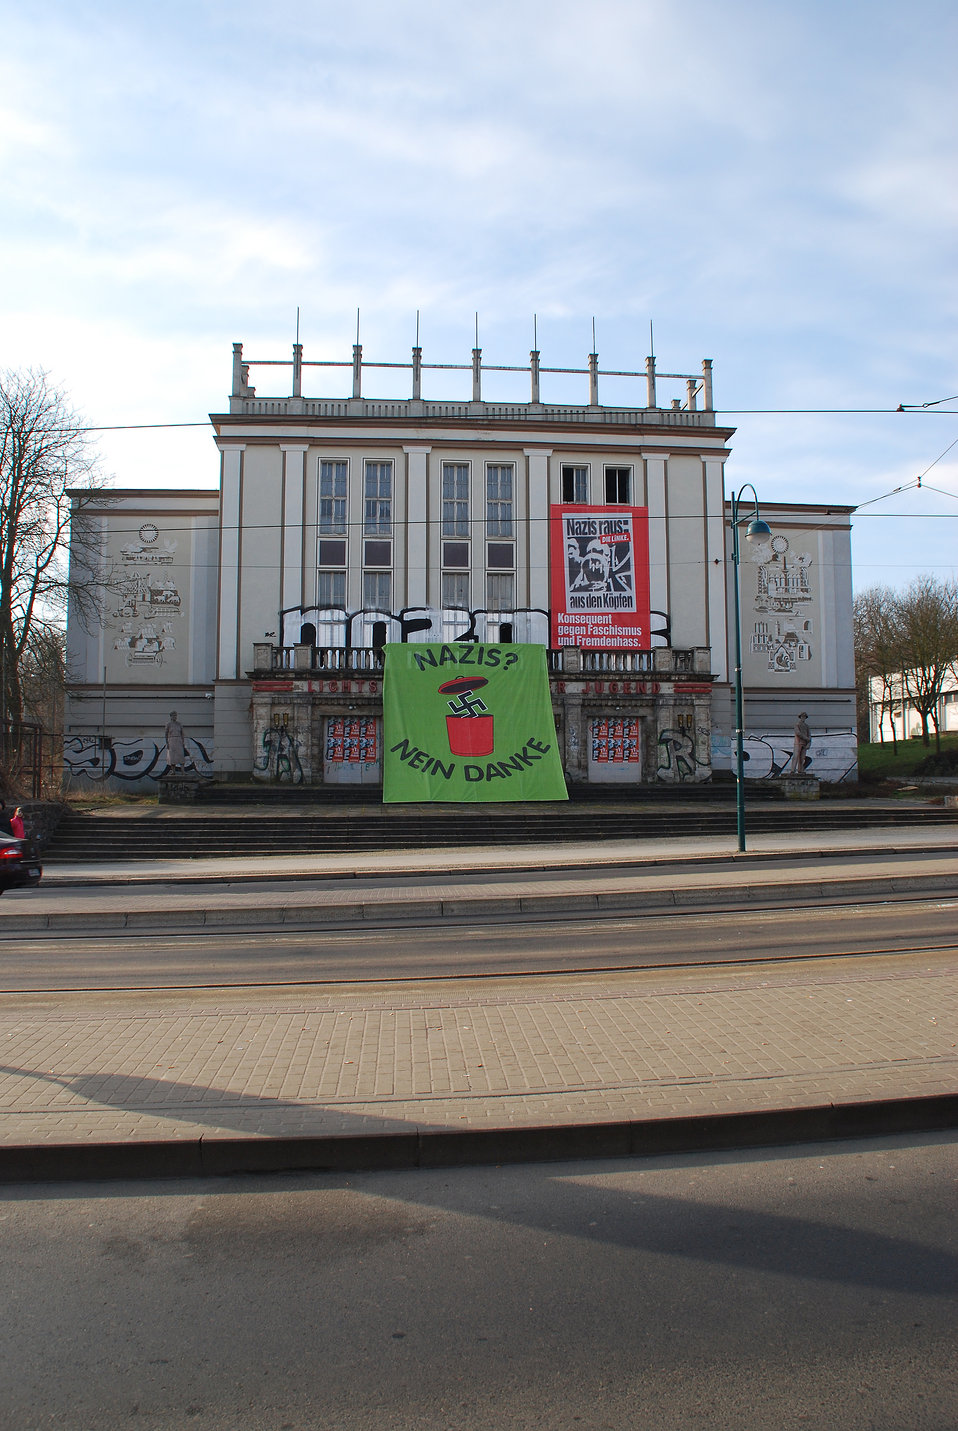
Proteste gegen den Nazi-Aufmarsch am 24.3.2012 in Frankfurt (Oder)